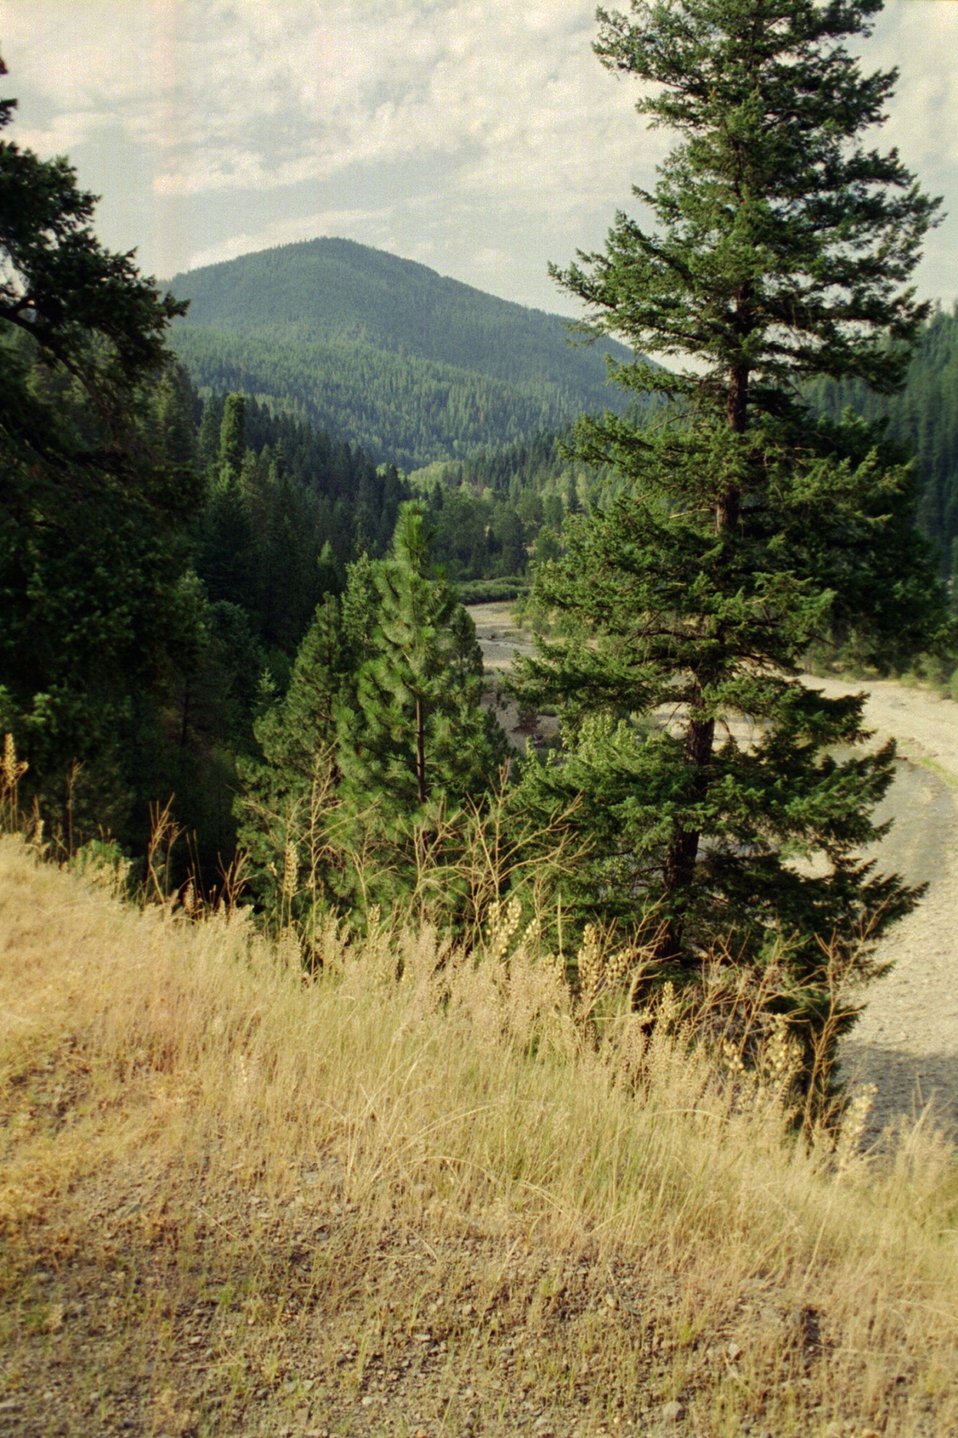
Riparian Area Stream Restoration from mining damage near Pinecreek Couer D'Alene Field Office UCSC Upper Columbia Salmon Clearwater District